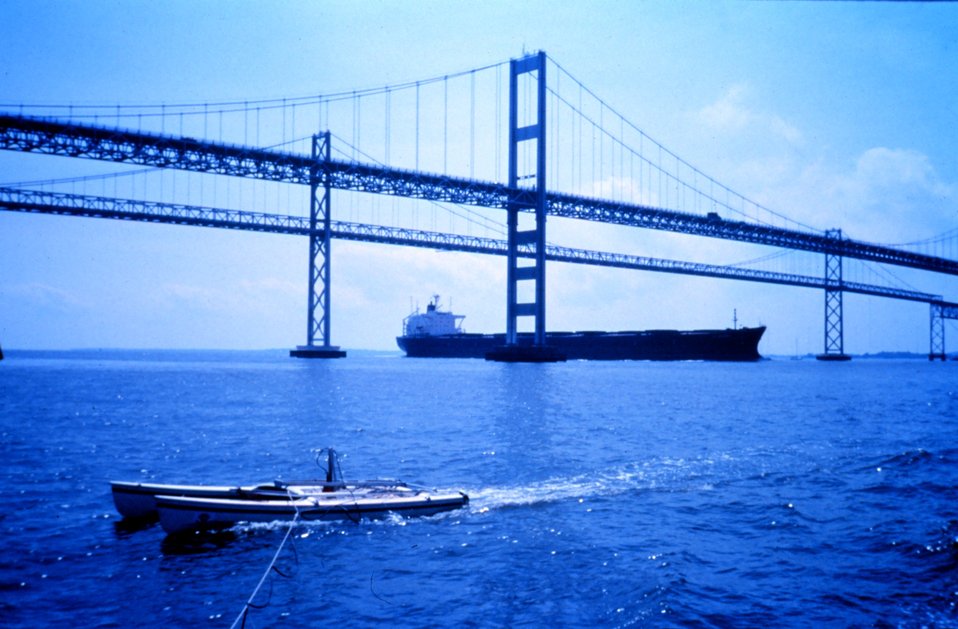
A modified catamaran takes mobile current profiles with an acoustic digital current profiler (ADCP) as a large bulk carrier passes under the Chesapeake Bay Bridge heading up the bay.